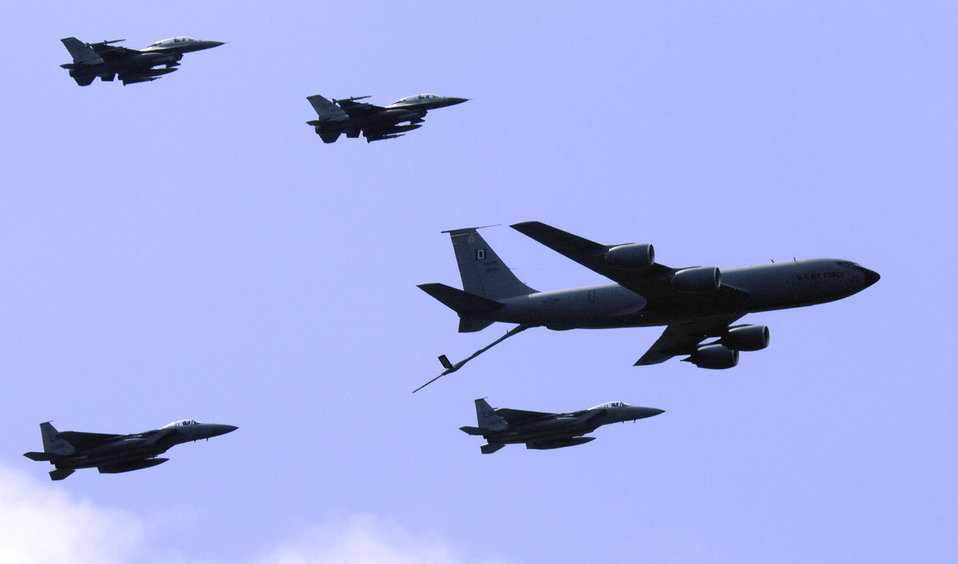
Happy birthday, RAF Mildenhall

A formation of F-16 Fighting Falcons, F-15 Eagles and a KC-135 Stratotanker fly over Royal Air Force Mildenhall, England, May 15 during the 75th Anniversary of the base. The five-aircraft formation was one part of a larger demonstration of airpower.